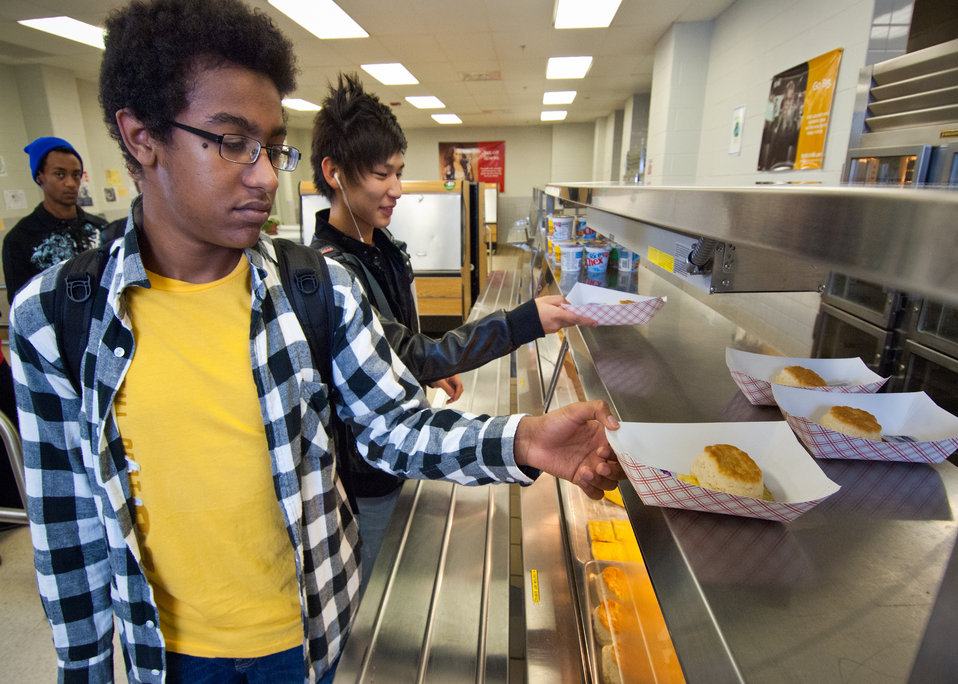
Students at Washington-Lee High School select their breakfast of Scrambled Eggs and Biscuits, on Wednesday, October 19, 2011 prepared by Arlington Public Schools, Food and Nutrition Services. The National School Lunch Program is a federally assisted meal program administered by the United States Department of Agriculture, Food and Nutrition Service operating in public, nonprofit private schools and residential child care institutions. It provides nutritionally balanced, low-cost or free lunches to children each school day.